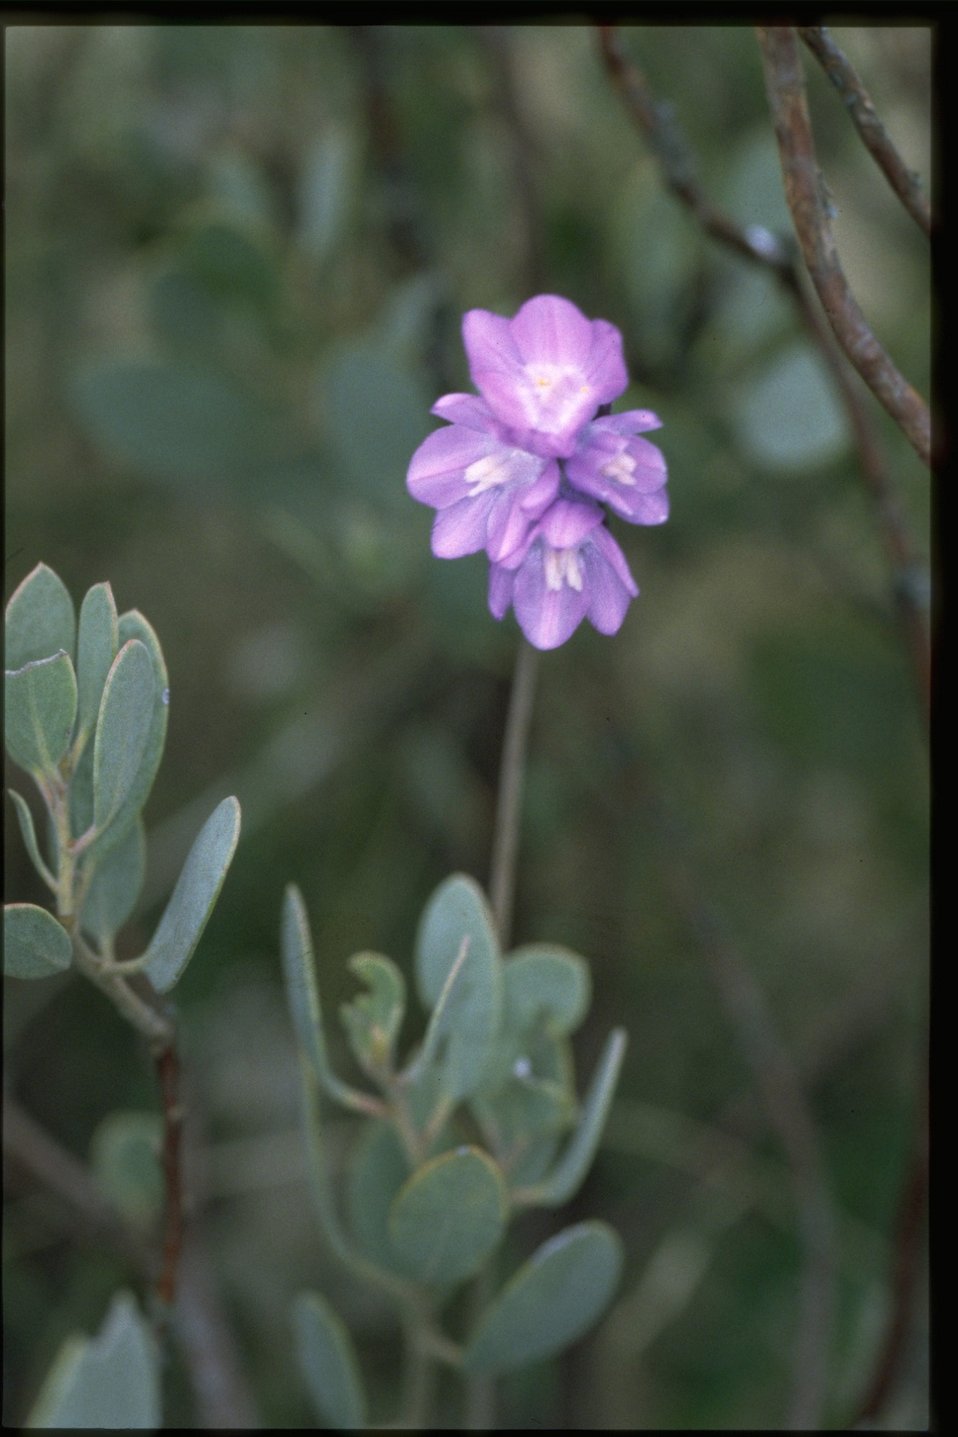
Medium shot of Dichelostemma capitatum.